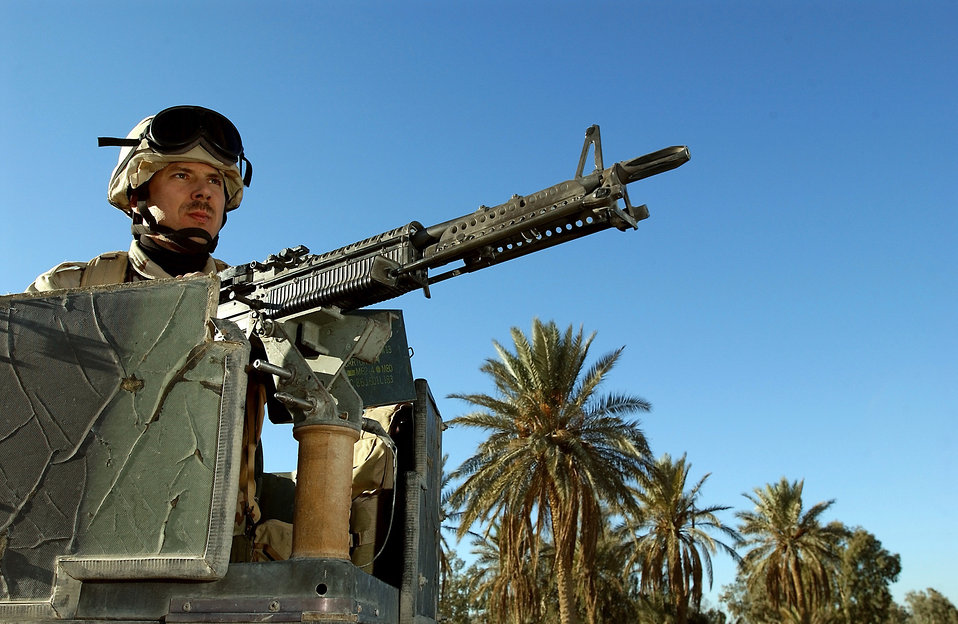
Iraqi Freedom

BAGHDAD INTERNATIONAL AIRPORT, Iraq -- Tech. Sgt. Steven Klunk keeps a watchful eye for suspicious activity while on guard duty here Nov. 21. Klunk is a security forces member with the 447th Expeditionary Security Forces Squadron.